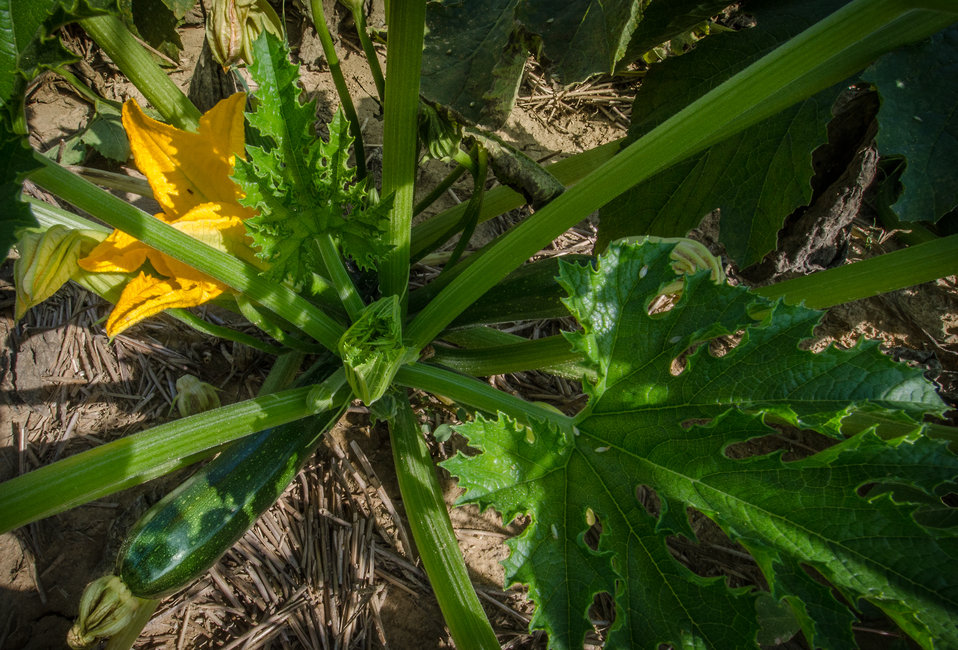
Kirby Farms, a third-generation century old family farm, in Mechanicsville, VA, just outside Richmond, is a year round operation, that covers 500 acres, and generates produce and grains, on Friday, Sept 20, 2013. Today’s harvest is green zucchini squash. 200 acres of the farm are devoted to eggplant, spinach, beets, tomato, Jalapeno peppers, melons and a variety of greens. Soybeans and small grain are grown on the remaining 300 acres. The fertile Virginia soil and their management practices, allows Kirby Farms to double and triple crop yields with rotational crop selection. Wholesalers, who buy from this farm, sell the produce to major supermarkets in the Mid-Atlantic region, from North Carolina to Maryland. Restaurants in the local area prepare and serve the local bought produce to patrons in the Richmond metropolitan area.